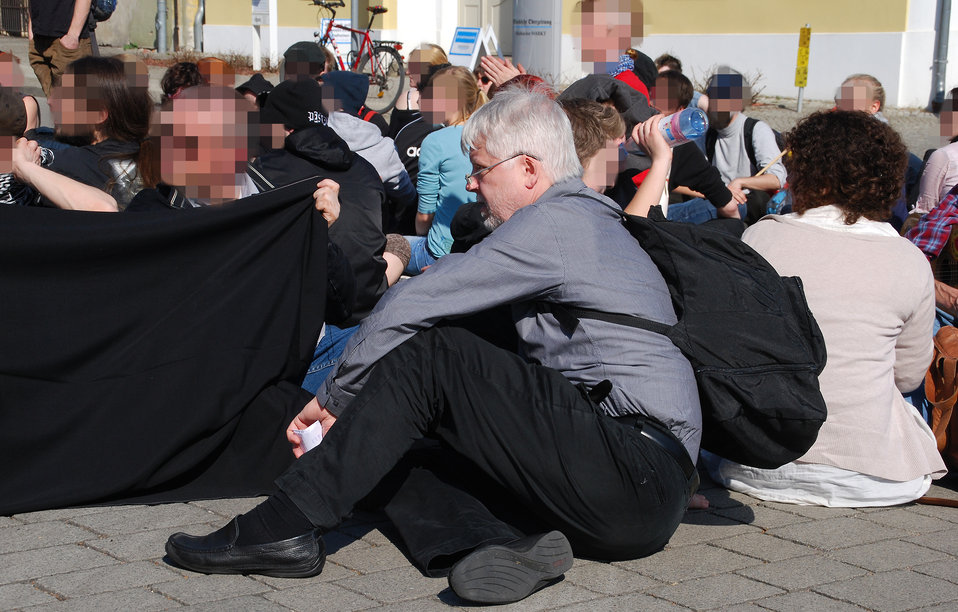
Proteste gegen den Nazi-Aufmarsch am 24.3.2012 in Frankfurt (Oder), mit Helmuth Markov, Finanzminister des Landes Brandenburg